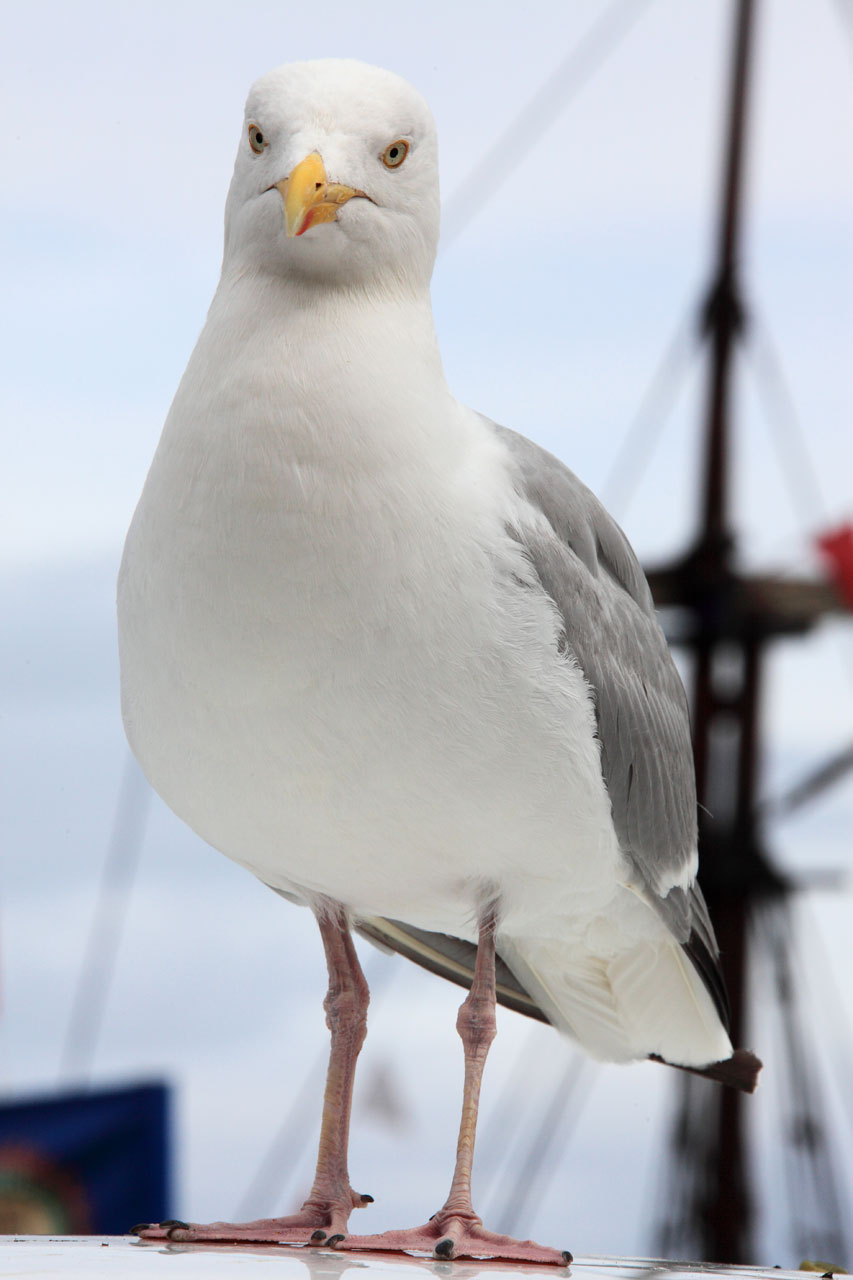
Curious seagull with an old boat in the background.